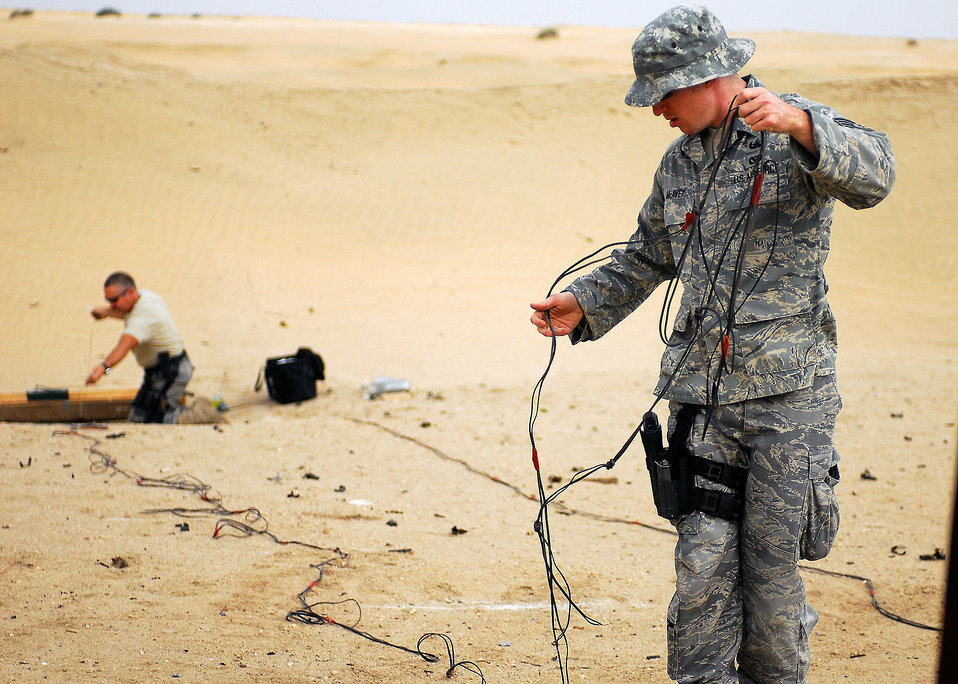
EOD troops clear hazards, keep locals safe

Staff Sgt. David Barrett (rear) and Staff Sgt. Brenden McAvey, 386th Expeditionary Civil Engineering Explosive Ordnance Disposal Flight members, work to set up a detonation site outside the wire at an air base in Southwest Asia. Airmen in the 386th EOD flight have safely cleared almost 1,000 unexploded ordinance devices during their six-month deployment here.